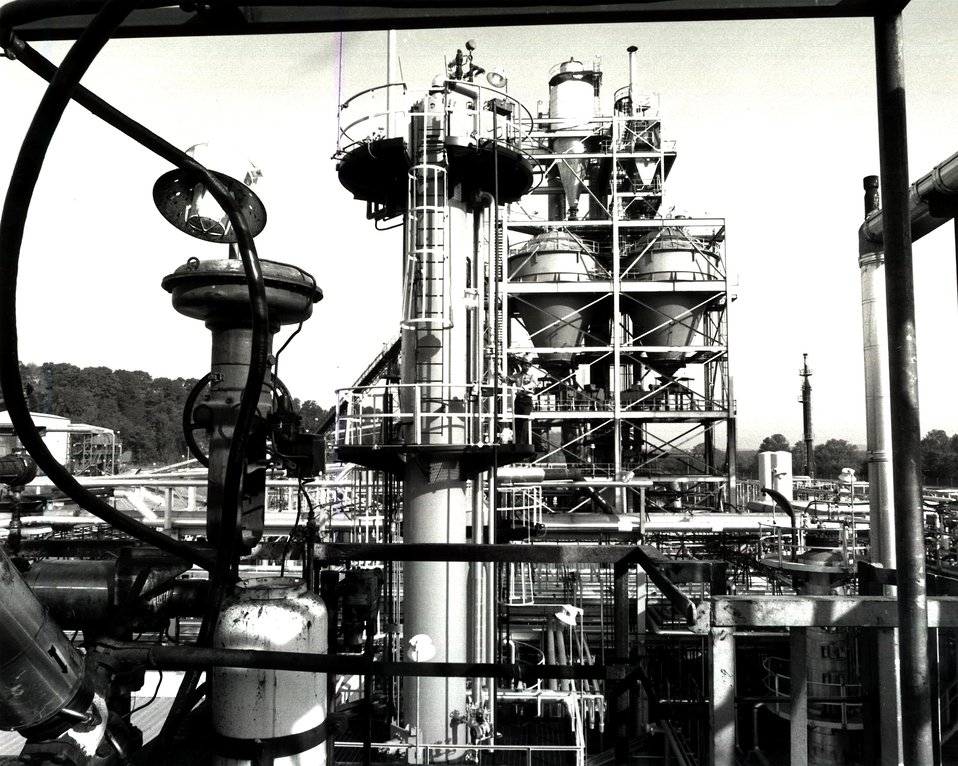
H-COAL PILOT PLANT'S COAL PREPARATION AND STORAGE BINS ARE IN THE BACKGROUND.